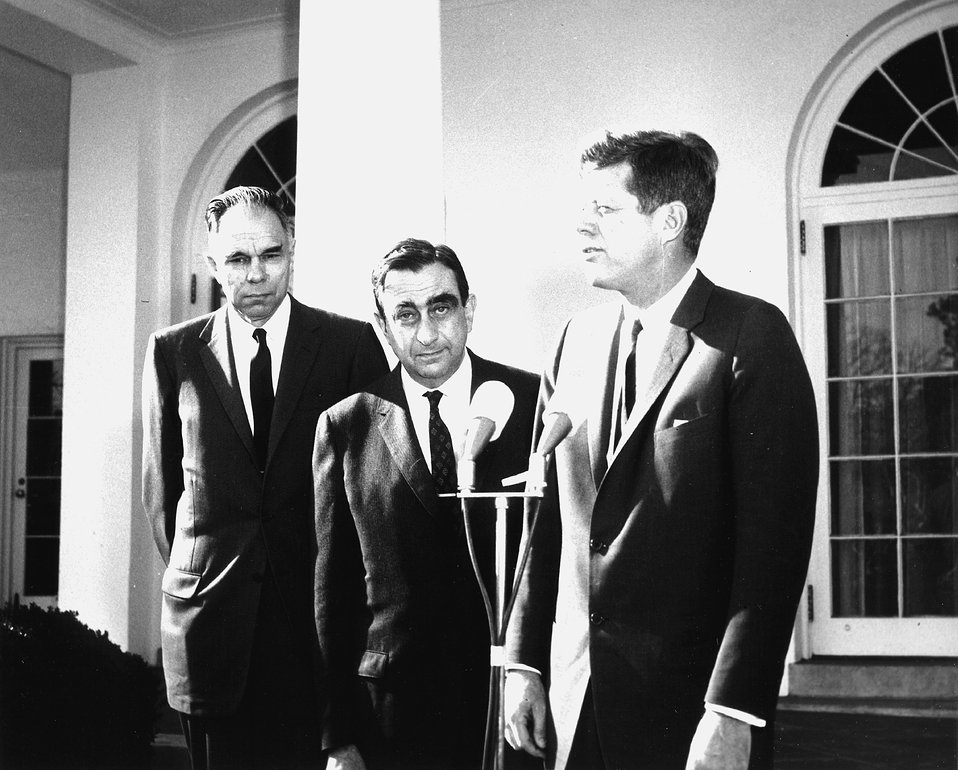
Fermi Award, 1962. Seaborg, Teller, Kennedy.